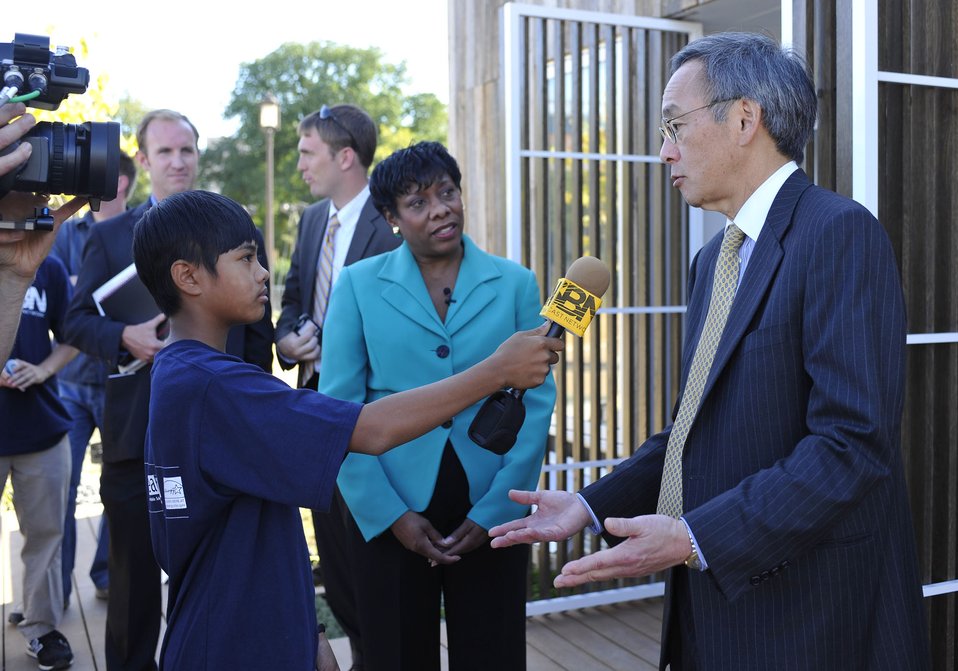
Solar Decathlon 2009 on the National Mall, with Sec. Chu

Solar Decathlon 09